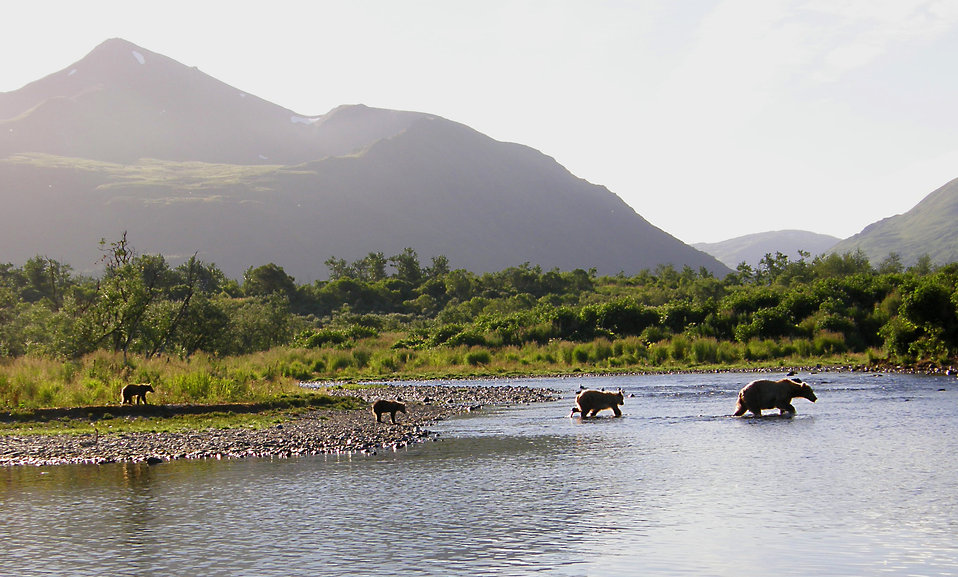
Bear family at Thumb River

Photo Credit: G Wheeler/USFWS

A sow and her cubs cross Thumb River.

Contact: Lisa Hupp@fws.gov

Source: Kodiak NWR